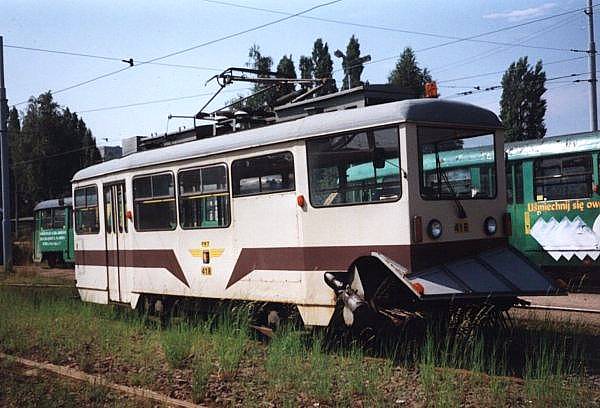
Konstal N Type (#41) based snow plough in Chorzów, Poland. Polski: Pług odśnieżny wykonany na bazie wagonu Konstal N w Chorzowie.